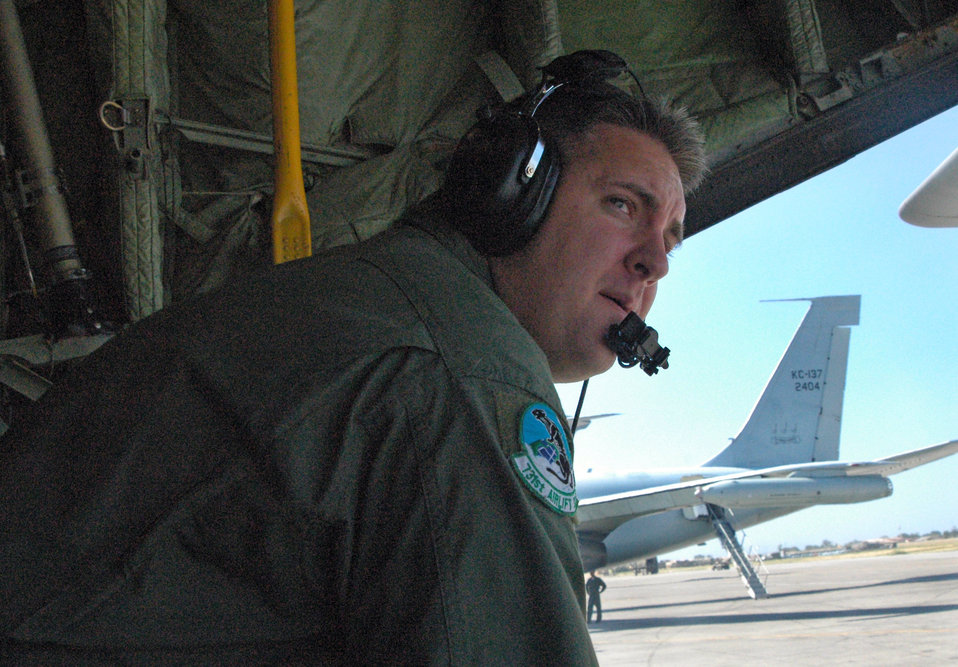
Airmen continue relief aid flights into Haiti

Tech. Sgt. Barry Burkitt looks on as a United Nations helicopter flies overhead Jan. 30, 2010, at the Toussaint L'Ouverture International Airport in Port-au-Prince, Haiti. Also providing aid is a KC-135 from the Brazilian air force, parked just behind Sergeant Burkitt and his C-130 Hercules. Sergeant Burkitt is one of approximately 50 Airmen from the 302nd Airlift Wing currently assigned to the 35th Expeditionary Airlift Squadron, which supports Air Expeditionary Force Coronet Oak at Muniz Air Base, Puerto Rico. Sergeant Burkitt is an Air Force Reserve C-130 loadmaster. The members are deployed in support of Operation Unified Response.